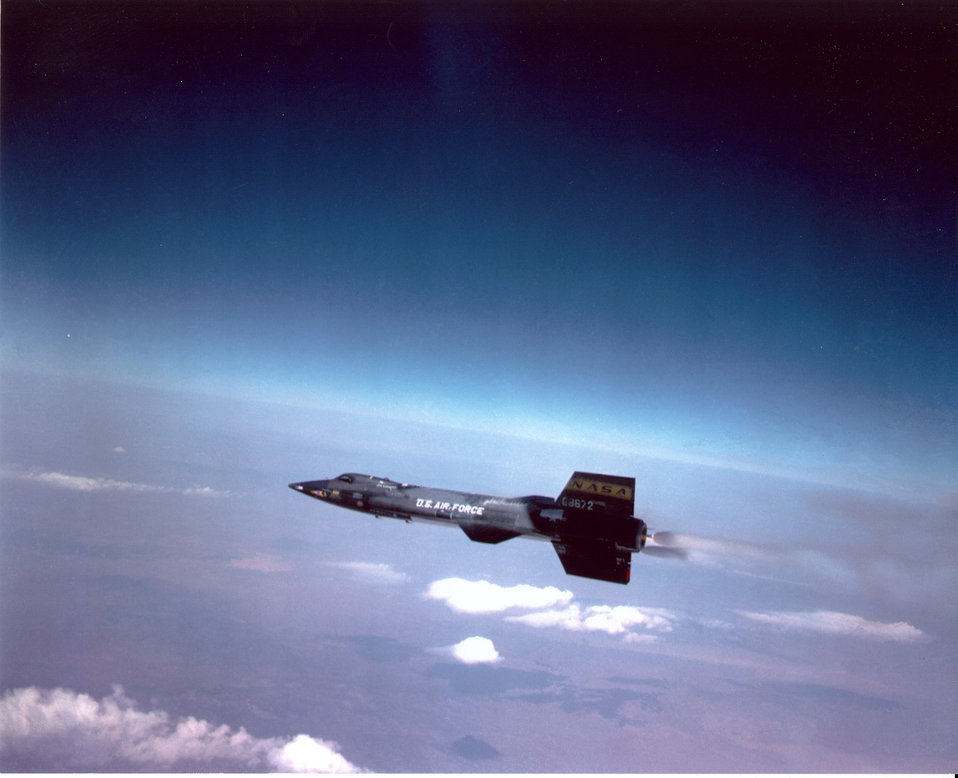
X-15

The X-15 in flight.